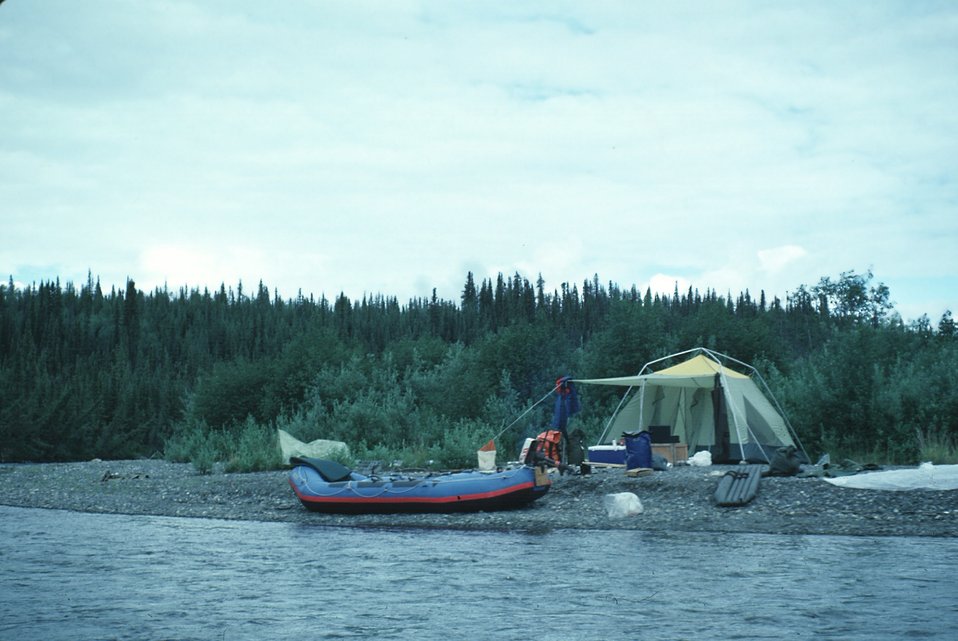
Camping along the Gulkana NWSR